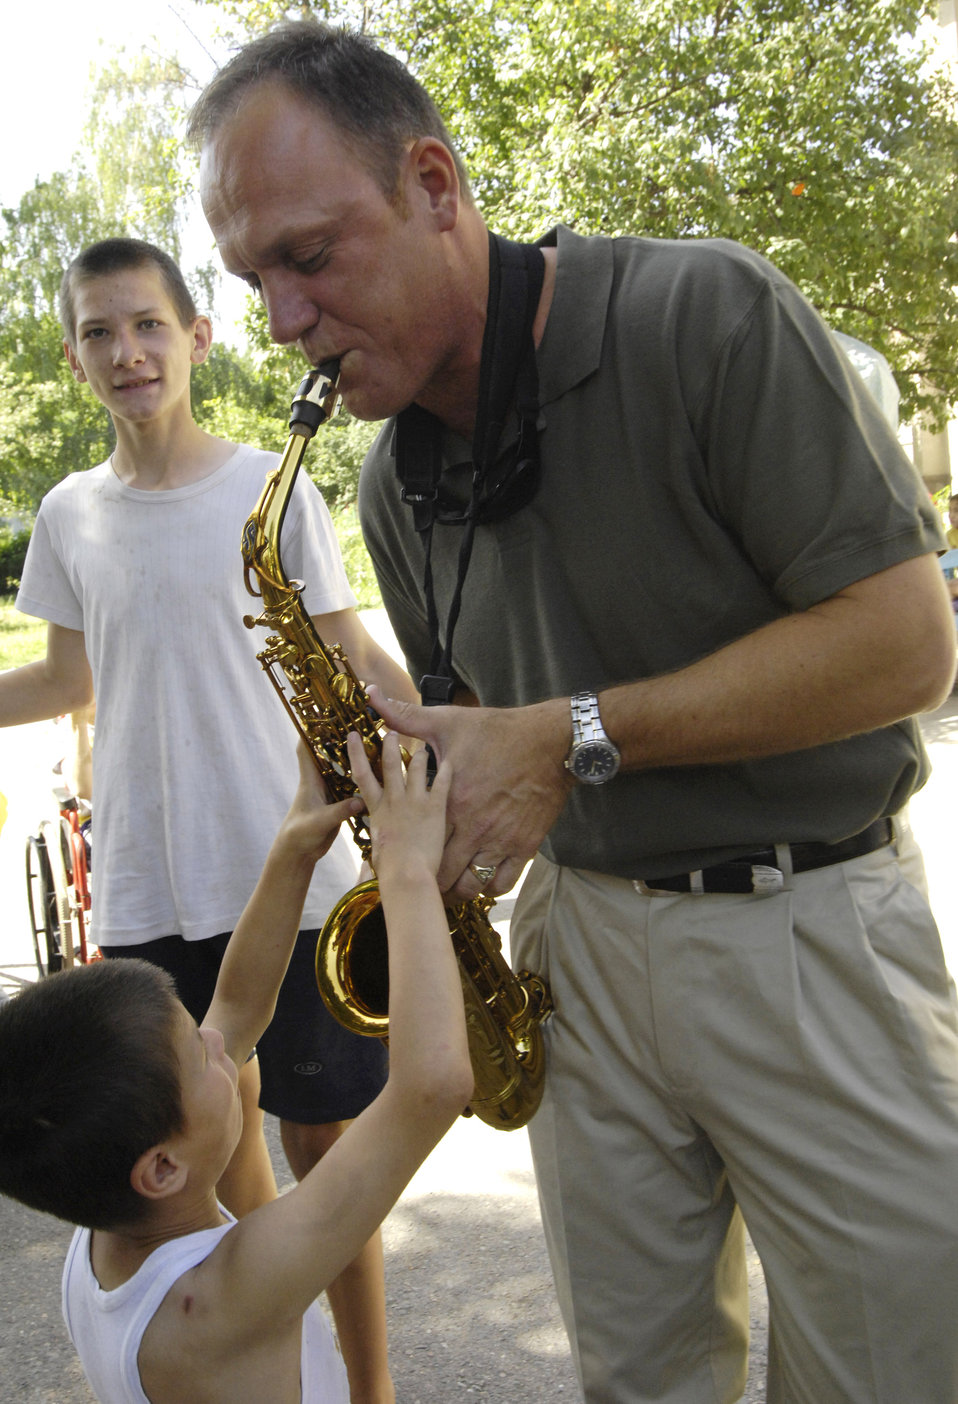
Special concert for some special children

Saxophonist Master Sgt. Daniel Weber introduces the children of the Belovodosky Orphanage to his instrument June 14 in Kyrgyzstan. After the band performed at the orphanage, the children returned the favor by singing some of their favorite Russian military songs for the band members.